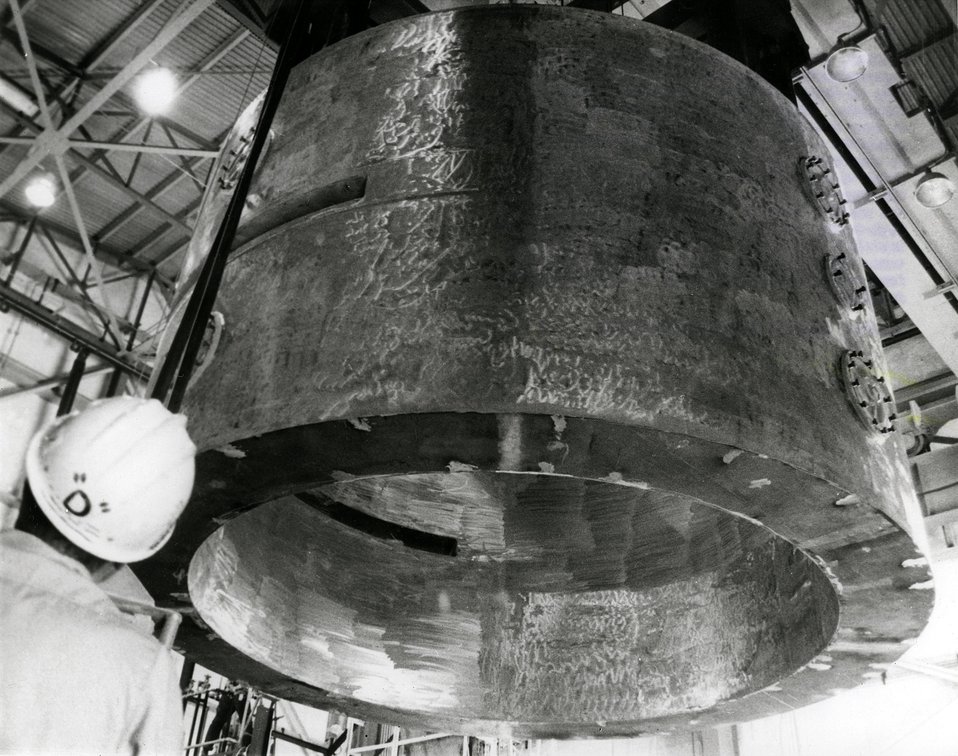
Coils of the world's largest superconducting magnet are lowered into their steel yoke at Argonne.
c.1969